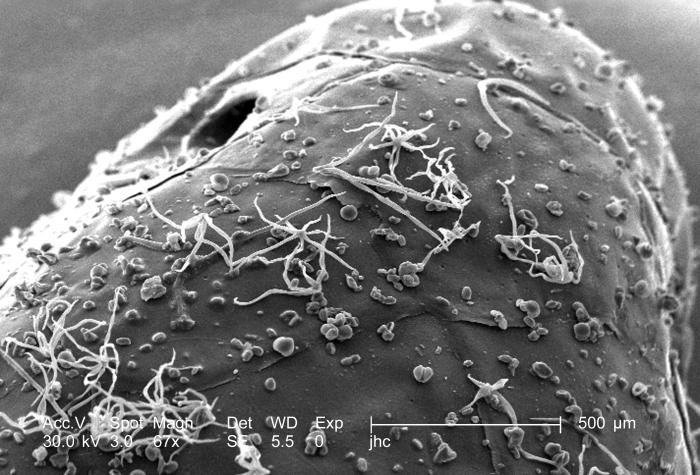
Under a low magnification of 67x, this scanning electron micrograph (SEM) revealed the presence of a coating of debris adhered to the ventral surface of an unidentified lizard's head region, which had been found deceased on the grounds of the Decatur, Georgia suburbs. In this field of view was the reptile's left nostril, or naris. Note the myriad of what proved to be unidentified pollen grains, and unknown parasitic mites. For the full complement of images related to this specimen see PHIL 8803 through 8816, which includes highly magnified views of a Nanorchestes sp. mite found coincidentally on this repitiles skin.